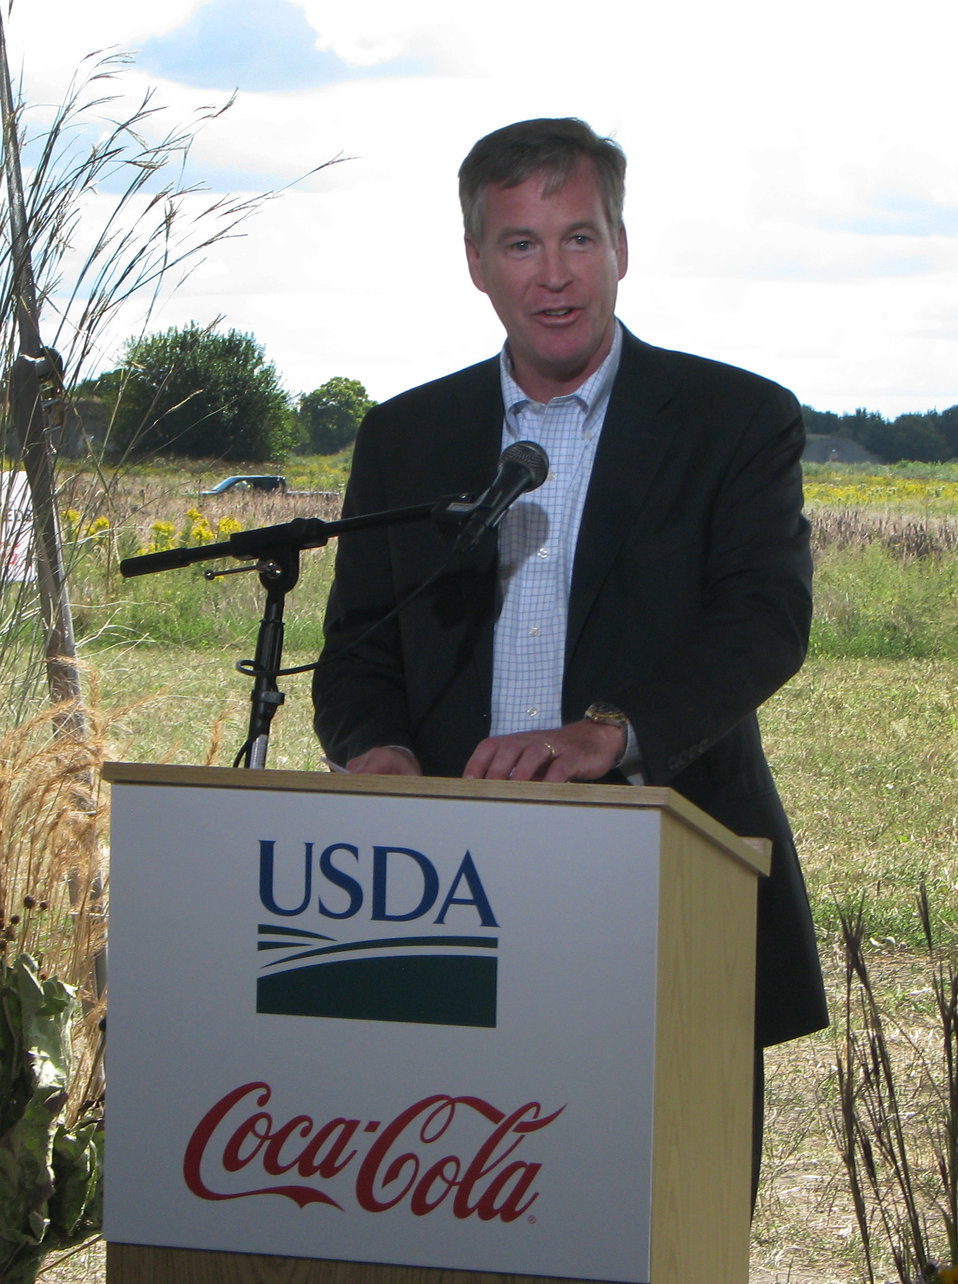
Coca-Cola Americas President Steve Cahillane speaks at a public-private partnership event announcing a project to restore and protect damaged watersheds on national lands at the Midewin Tallgrass Prairie in Illinois on Friday, Sep. 13, 2013. The goal of this partnership is to return more than a billion liters of water to the National Forest System that provides drinking water to more than 60 million Americans.